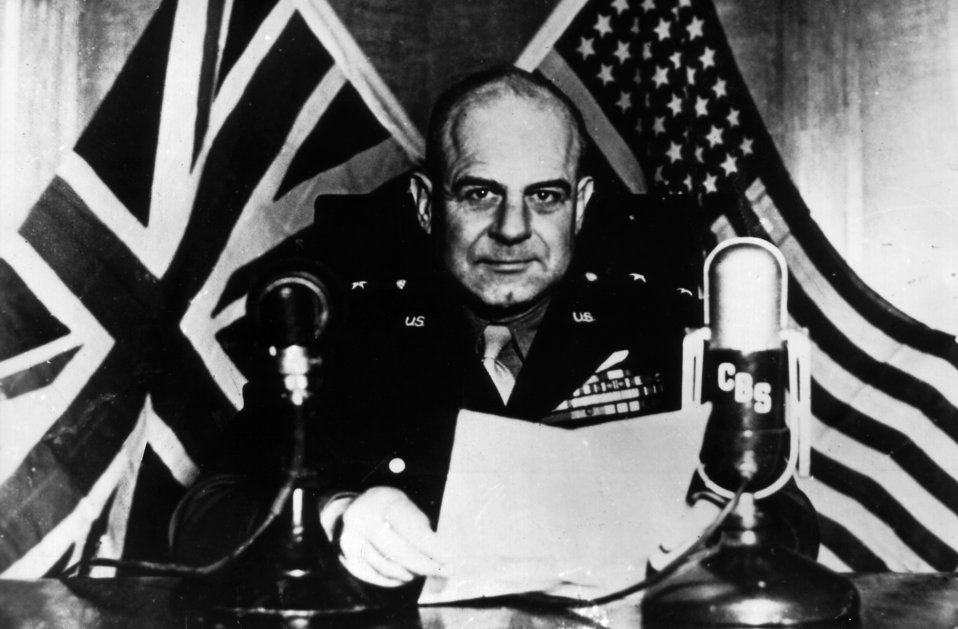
Doolittle reports on British radio

Lt. Gen. James H. Doolittle, commander of Army Air Forces Eighth Air Force, speaks on a British radio program observing the launch of the U.S. aircraft carrier USS Shangri-La. General Doolittle reported that the 8th AF knocked out more than 1,500 German fighter planes and dropped more than 24,000 tons of bombs on Germany in April, 1944.